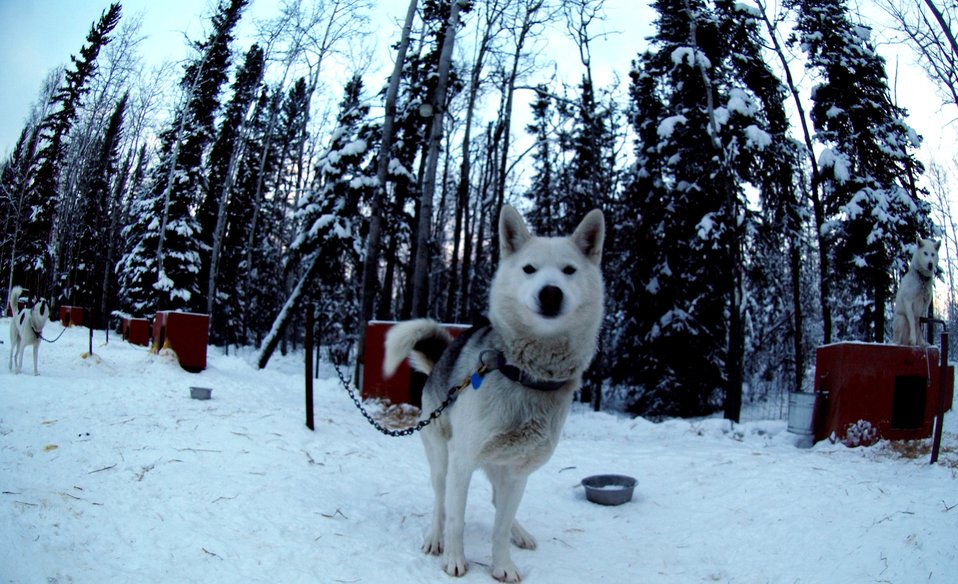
Pilot mushes dogs for noble cause

Tahoe, one of the lead dogs of a team of 27 Siberian Huskies, stares curiously into the lens of the camera Jan. 10 in Alaska. Tahoe and his team race raise awareness and funds for disabled children. Maj. Blake Matray, a 168th Air Refueling Wing KC-135 Stratotanker pilot at Eielson Air Force Base, Alaska, operates the Sled Dog Fund, Inc., which is a non-profit organization that support disabled children and their families and finance clinical research on developmental disabilities, hospital programs, and educational programs.